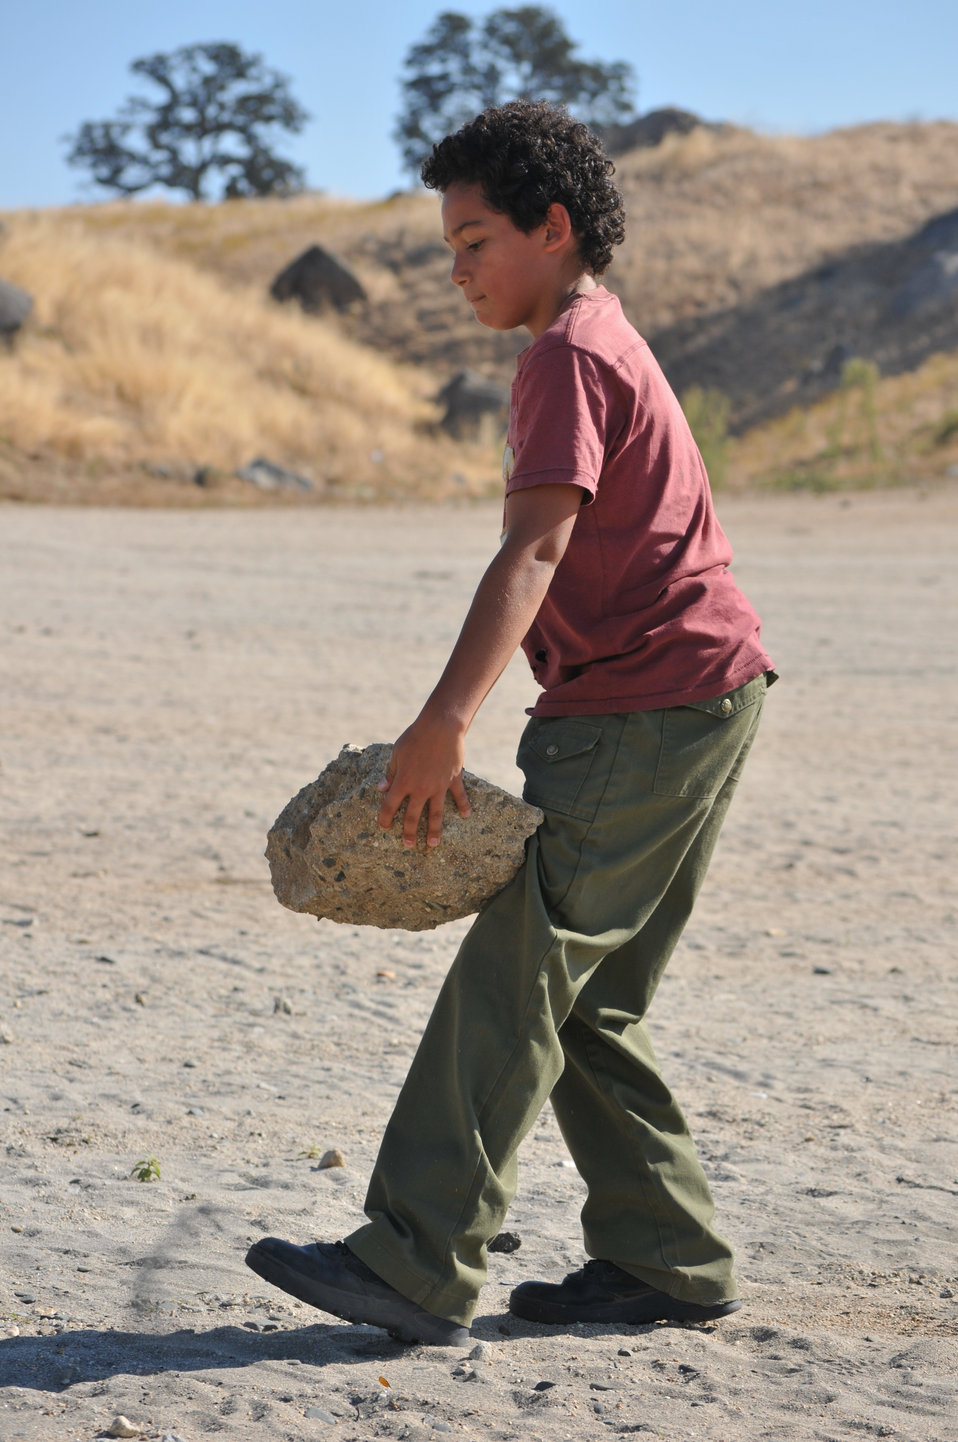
HENSLEY LAKE, Calif. (Sept. 25, 2010) – A volunteer clears a rock from the swimming beach here Sept. 25, taking part in National Public Lands Day. More than 110 volunteers helped Hensley staff remove litter, repair trail erosion, clean the swimming beach and paint and clean signs throughout the park.